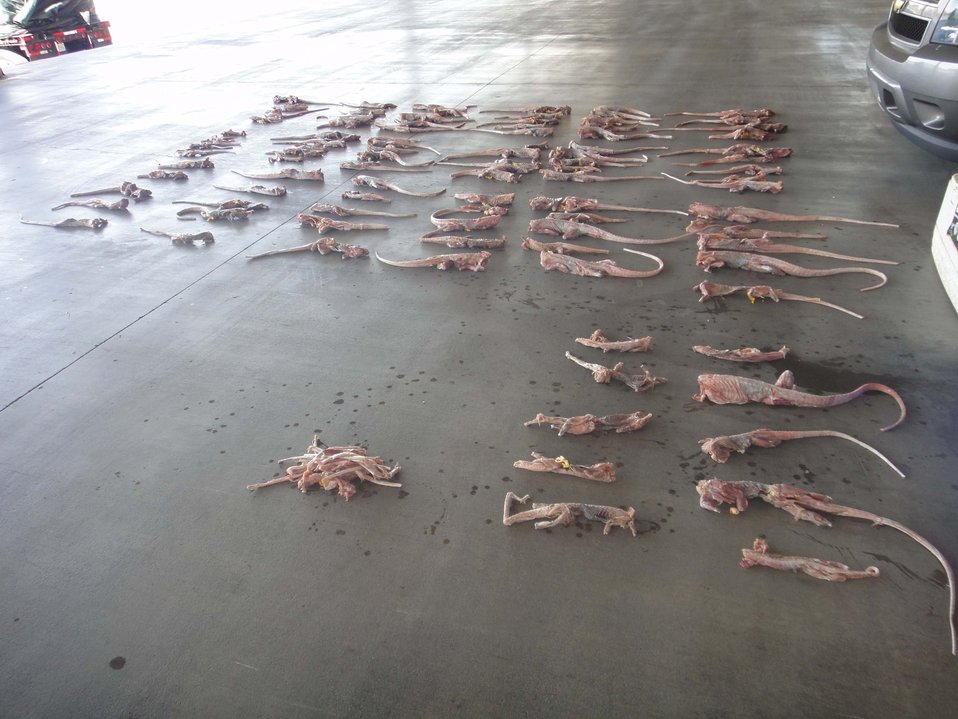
Iguana Meat 3

U.S. Customs and Border Protection officials seized this iguana meat on June 7, 2011, when Elidoro Soria Fonseca tried to smuggle it into the U.S. at the Otay Mesa Port of Entry. He had 159 pounds of the meat in his vehicle.